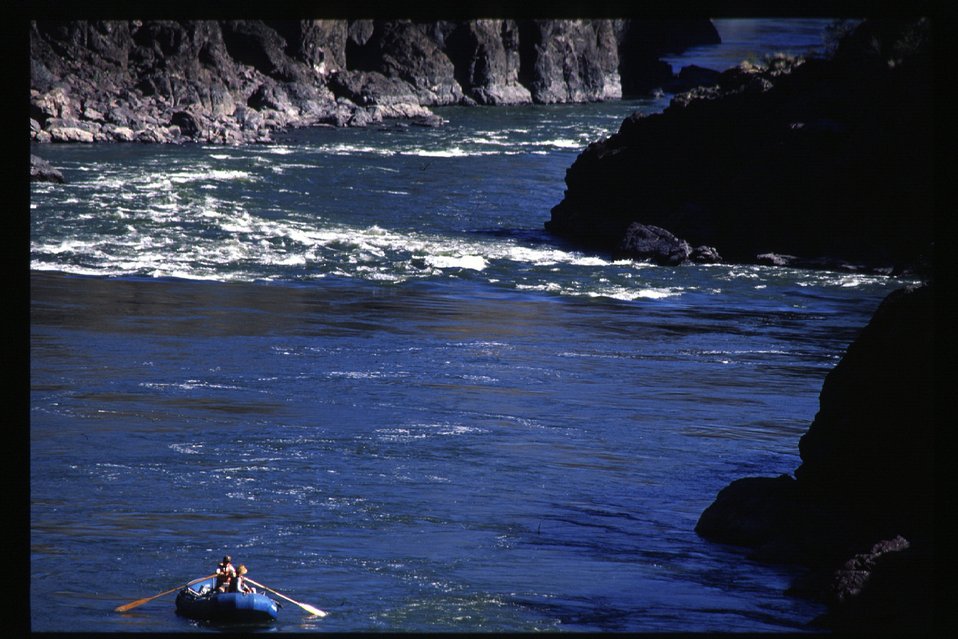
White water rafting Lower Salmon River Cottonwood Field Office UCSC Upper Columbia Salmon Clearwater District